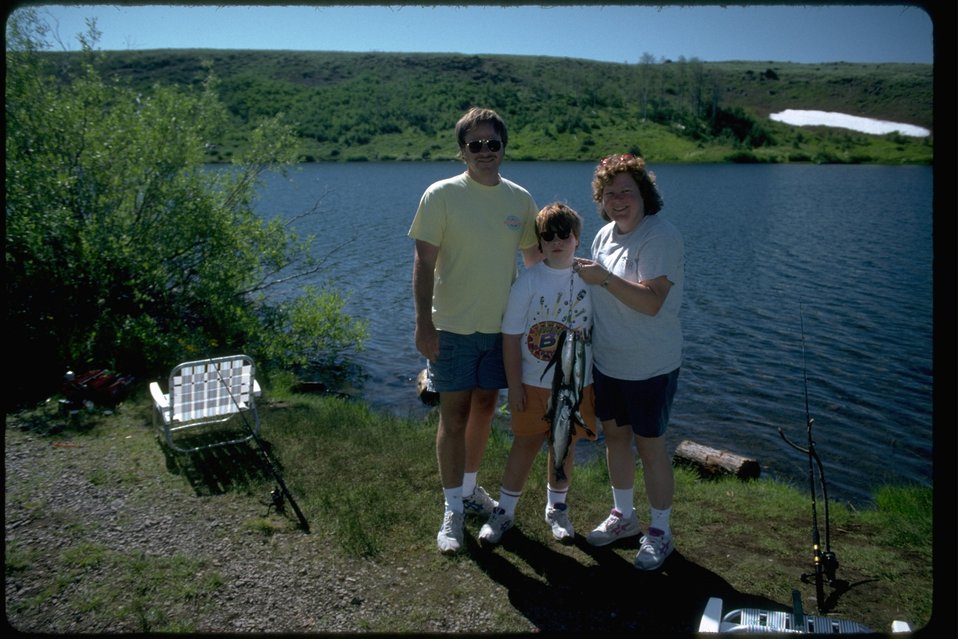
A Fishing Success! -- At Fish Lake, Steens Mountain in Southeastern Oregon.